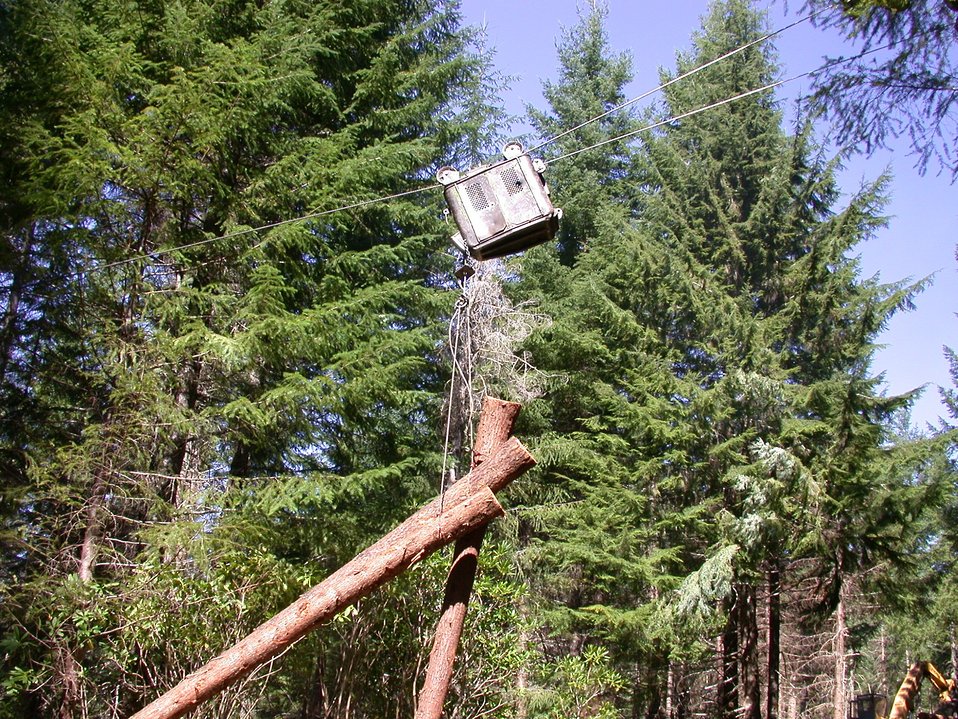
Camas East Timber Sale in Late Successional Reserve.